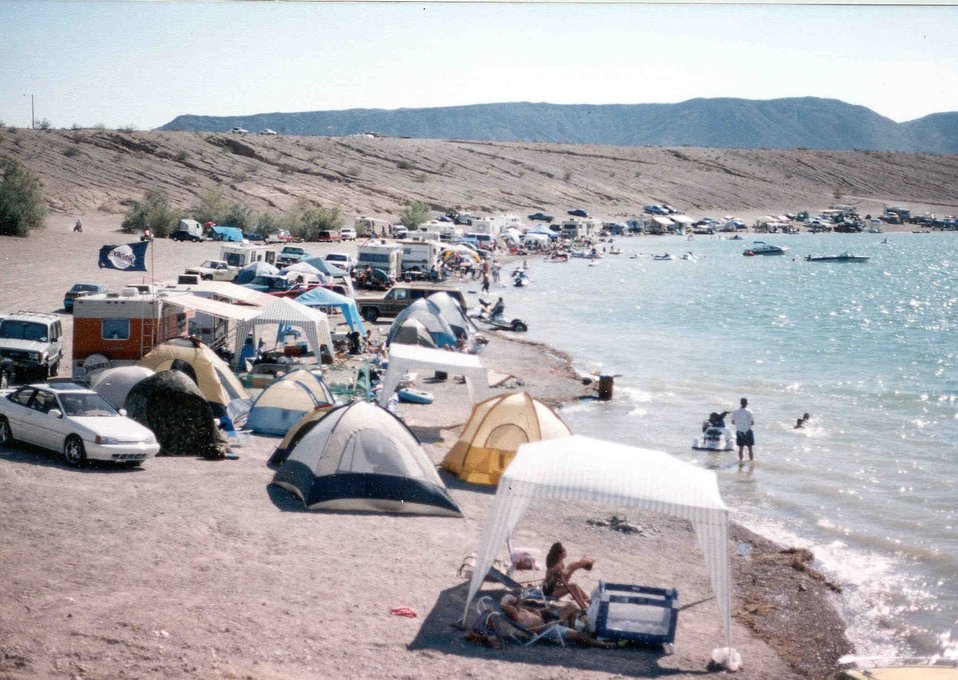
Recreationists having fun at the lake on a warm summer holiday weekend.